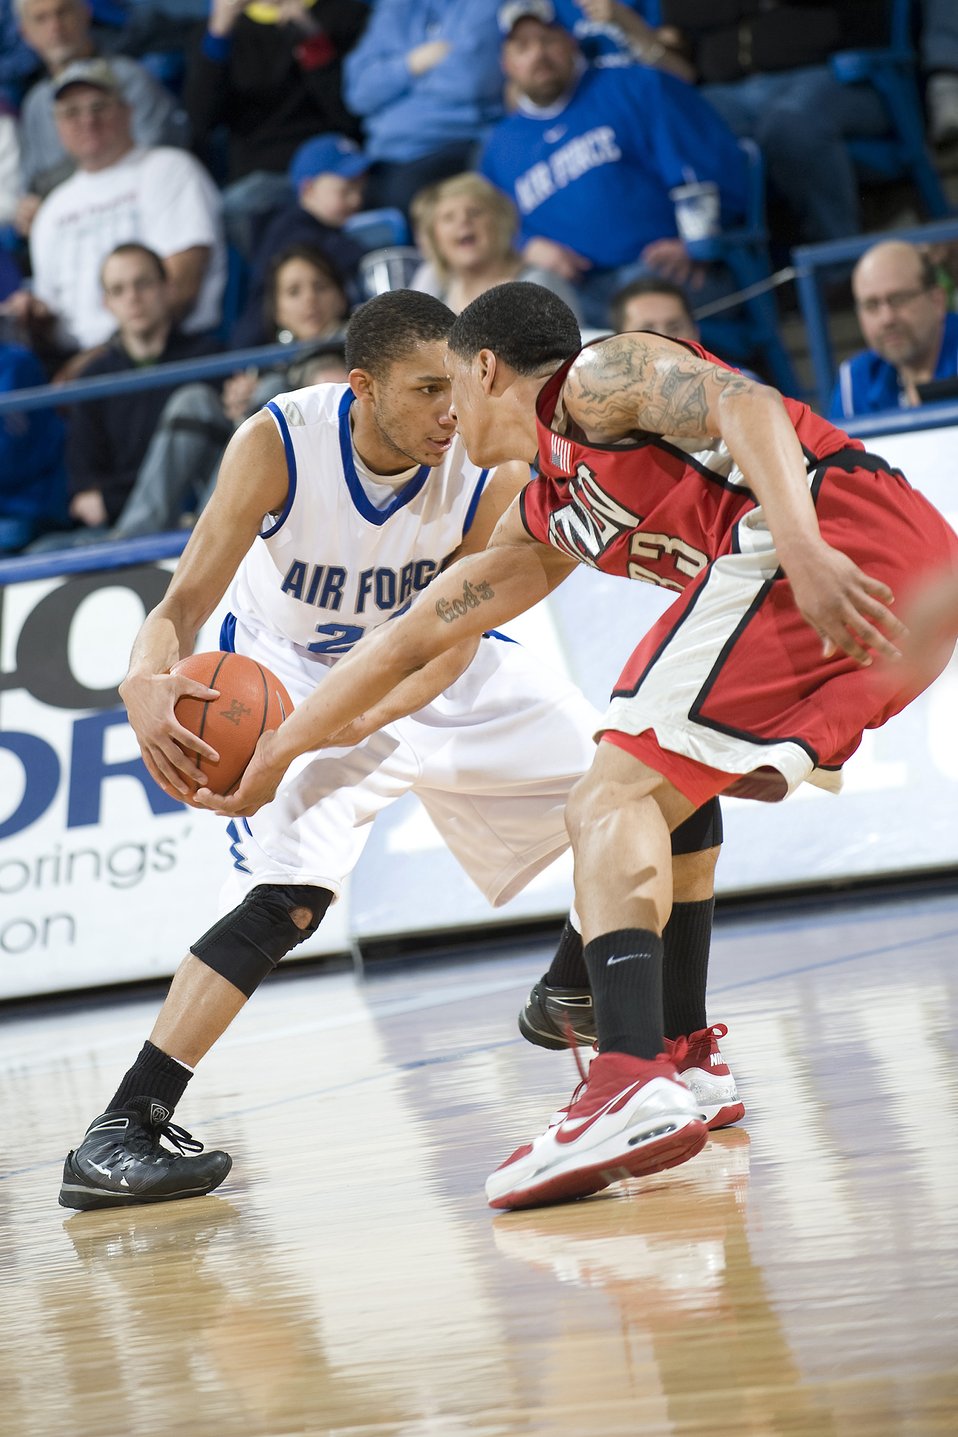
Falcons fall to Running Rebels

Falcon senior guard Avery Merriex attempts to penetrate the Rebel defense during the Feb. 27, 2010, basketball game against the University of Nevada Las Vegas Running Rebels at the U.S. Air Force Academy's Clune Arena. UNLV went on to defeat the Falcons by a score of 77 to 47.